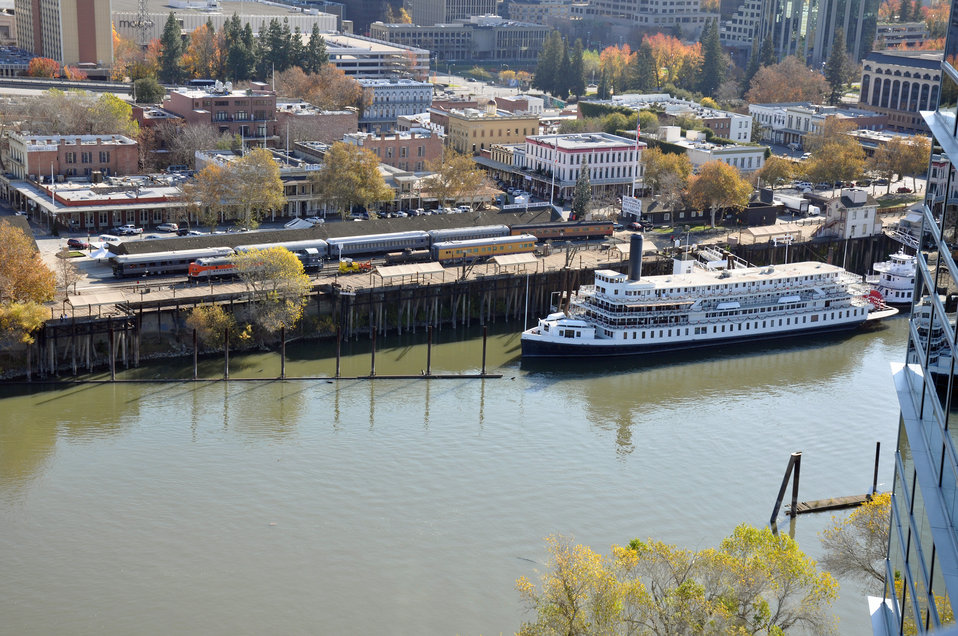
Delta King Riverboat

on the Sacramento River in downtown Sacramento

USFWS Photo/Steve Martarano

Photo taken from the CalSTRS Building in West Sacramento